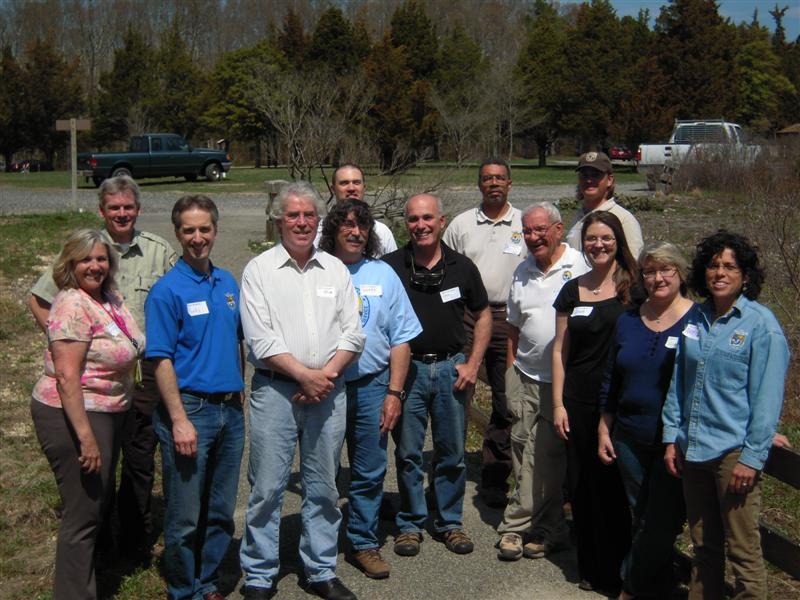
Vulnerability Assessment

Strenghtening local, state and federal partnerships is a key component to confronting climate change.